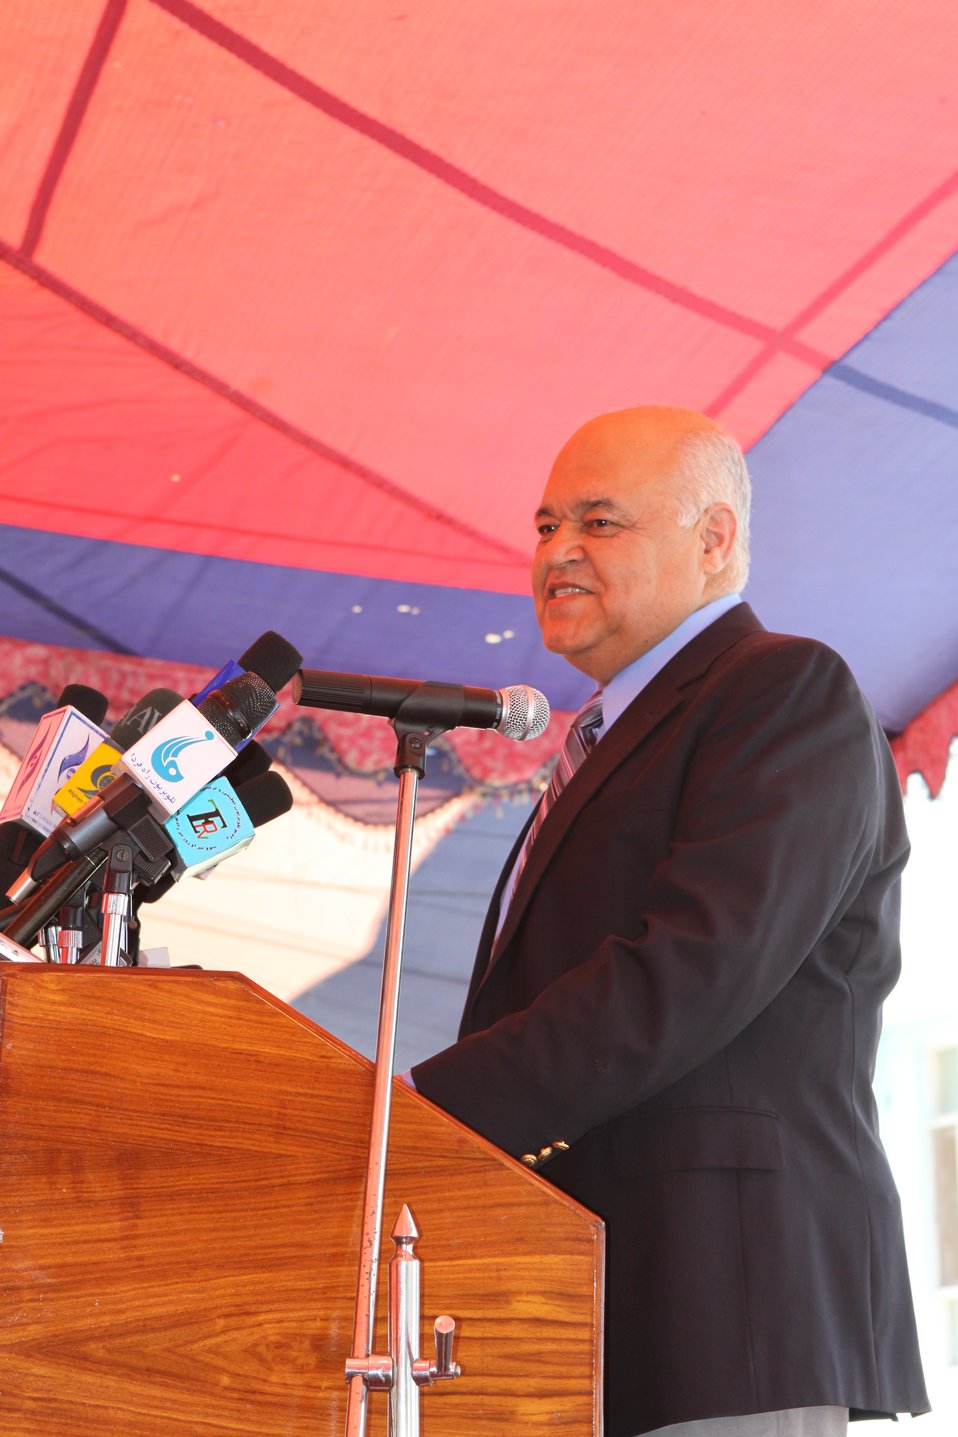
100522 ATVI Graduation 060